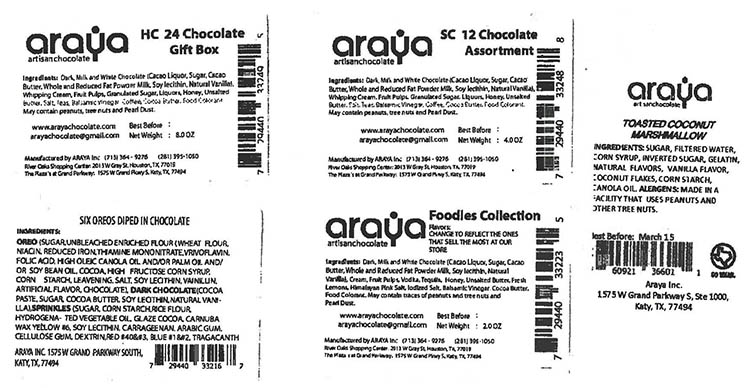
RECALLED – Chocolate Bars, Marshmallows, Dry Fruits, and Chocolate Gift Boxes

January 23, 2014 – Product Recall – Araya Inc. Issues Allergy Alert on Undeclared Tree Nuts, Wheat, Milk and Soy in Their Chocolate Bars, Marshmallows, Dry Fruits and Chocolate Gift Boxes.